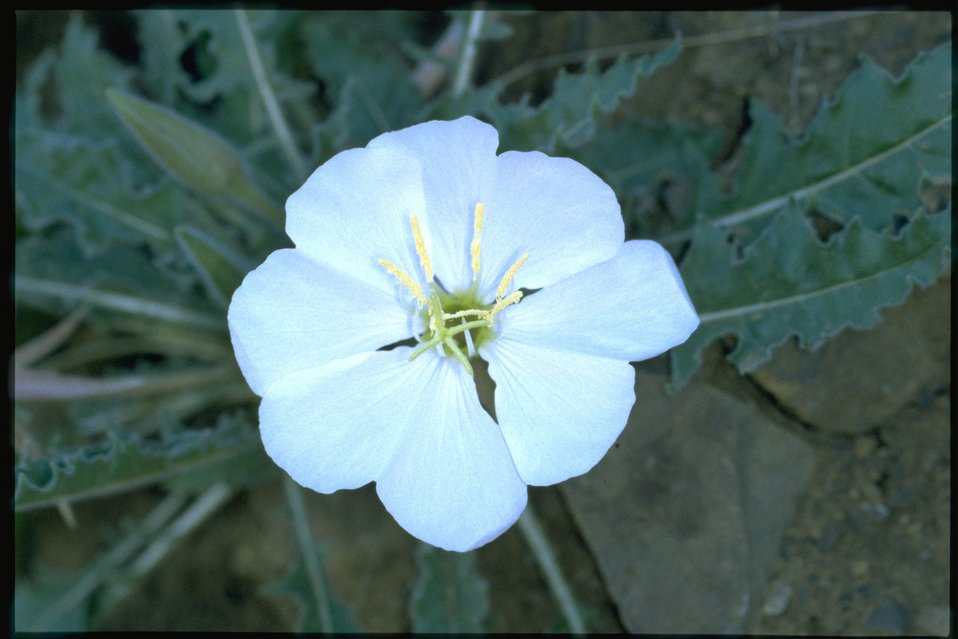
Closeup shot of Oenothera.